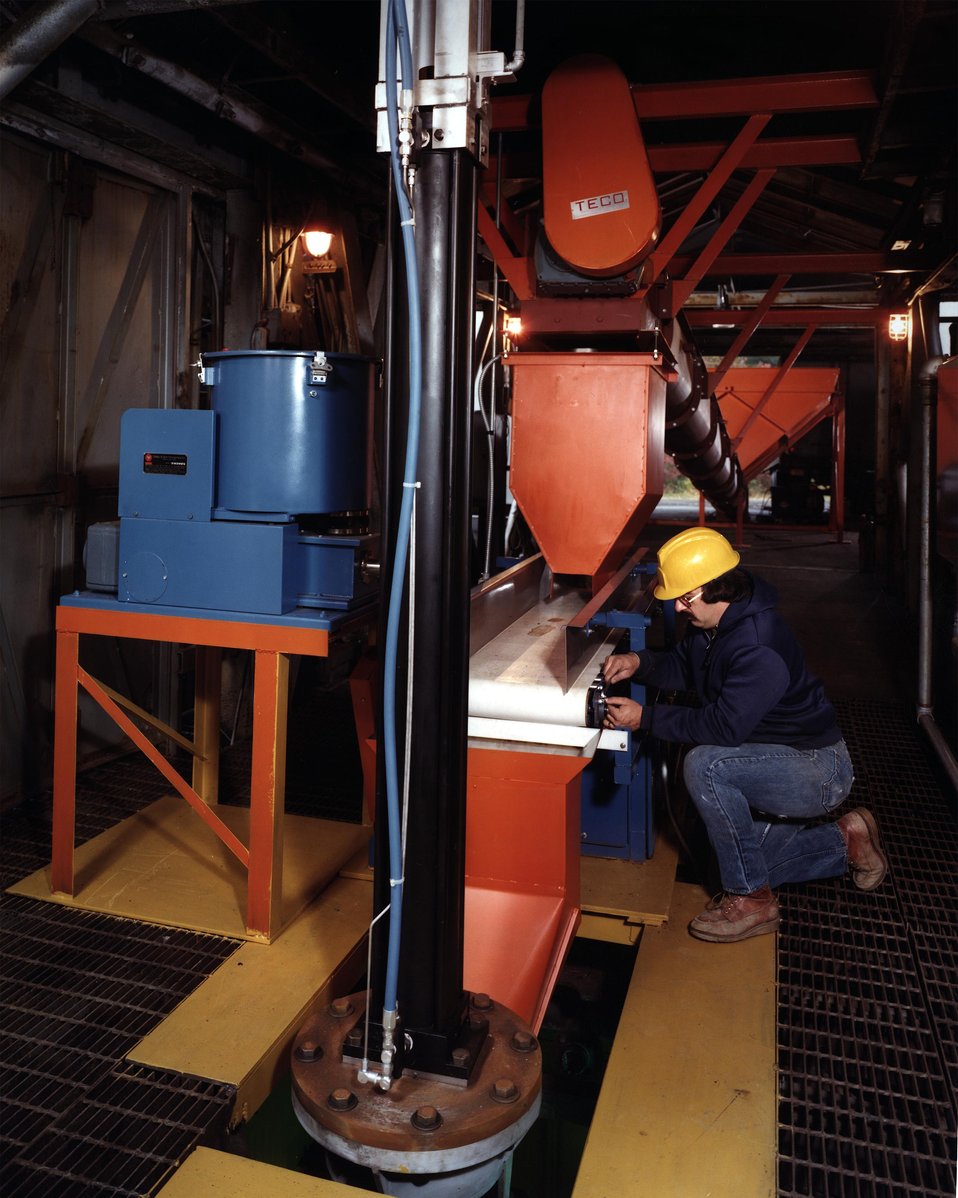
THE WOOD CHIP FEED SYSTEM FOR PDU IN THE UPPER LEVEL OF PIT NUMBER 4.

RESEARCHERS WILL ASSESS THE FEASIBILITY OF GASIFYING BIOMASS TO PRODUCE FUEL IN A SMALL, CRITICAL PRESSURE, LOW TEMPERATURE, WATER/STEAM GASIFIER. IN THE GASIFIER, BIOMASS (WOOD,PLANT OR ANIMAL WASTES, ETC.) IS MIXED WITH STEAM AND OXYGEN AT HIGH TEMPERATURES AND PRESSURES TO PRODUCE GAS, LIQUID FUELS AND/OR FUEL OIL. A LOW-COST SYSTEM WAS PROPOSED, DIFFERENT TYPES OF BIOMASS WERE STUDIED, MODELS WERE ESTABLISHED, AND A THREE DRY TONS PER-DAY PROCESS DEVELOPMENT UNIT WAS DESIGNED. IN ADDITION, AN ECONOMIC ASSESSMENT WAS MADE CONCERNING THE MEDIUM BTU GAS END PRODUCT. THE WOOD CHIP BIN IS IN THE BACKGROUND WITH THE SCREW CONVEYOR EXTENDING FORWARD AND DROPPING TO THE WEIGHING CONVEYOR. FROM THE CONVEYOR, THE CHIPS GO INTO THE CHUTE AND THEN INTO THE HYDRAULIC CYLINDER THROUGH THE FLOOR IN THE FOREGROUND. THE ROUND BIN AT THE LEFT IS THE CATALYST FEEDER.